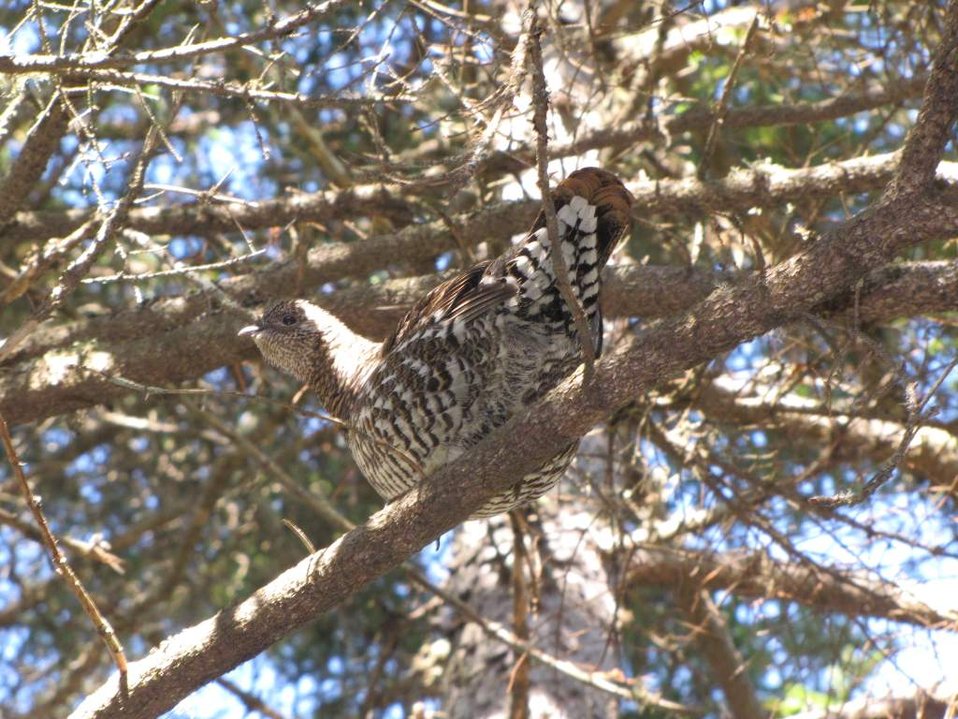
Female spruce grouse at Conte National Fish and Wildlife Refuge

Female spruce grouse at the Nulhegan Basin Division of the Silvio O. Conte National Fish and Wildlife Refuge in Vermont.

Credit: David Govatski/USFWS

www.fws.gov/r5soc/come visit/nulhegan basin division.html